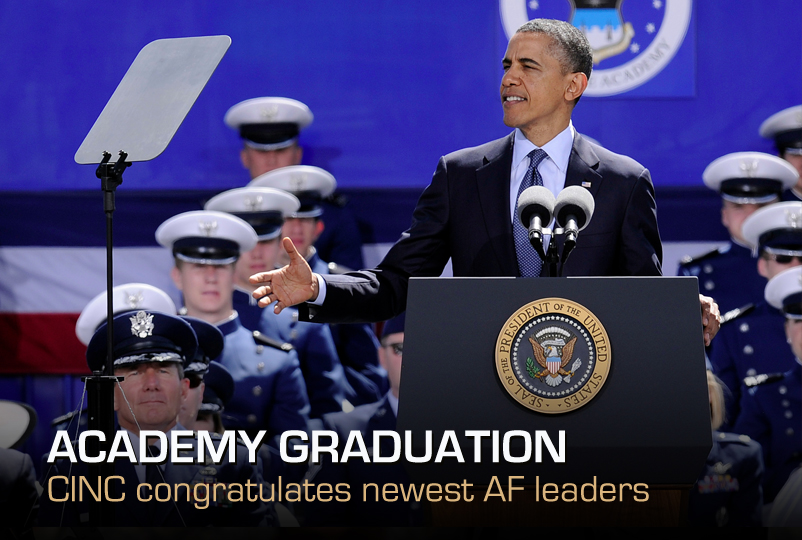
Academy Graduation